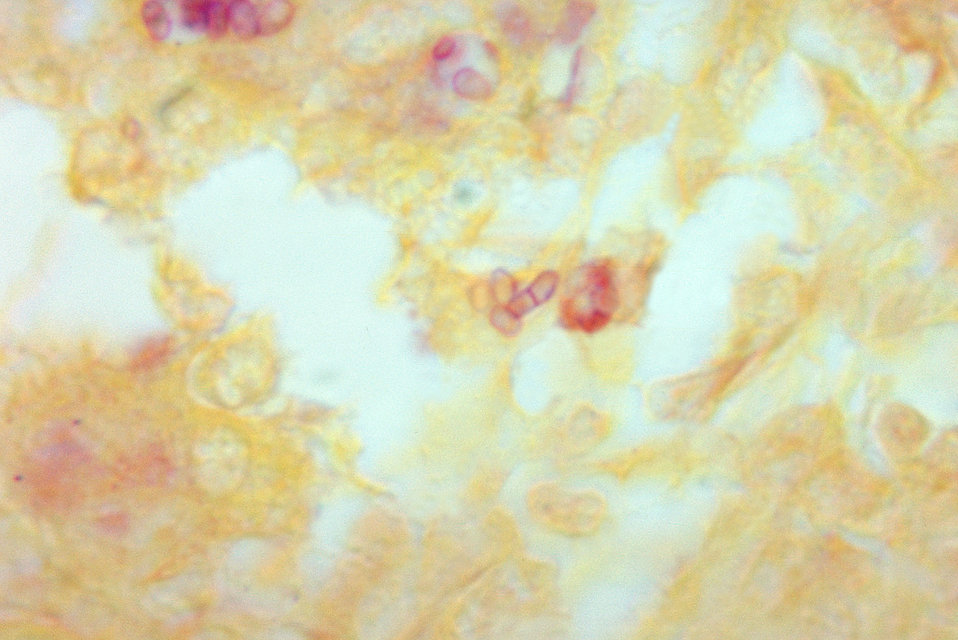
Note the histopathologic changes seen in a mouse testicle indicating penicilliosis due to Penicillium marneffei.